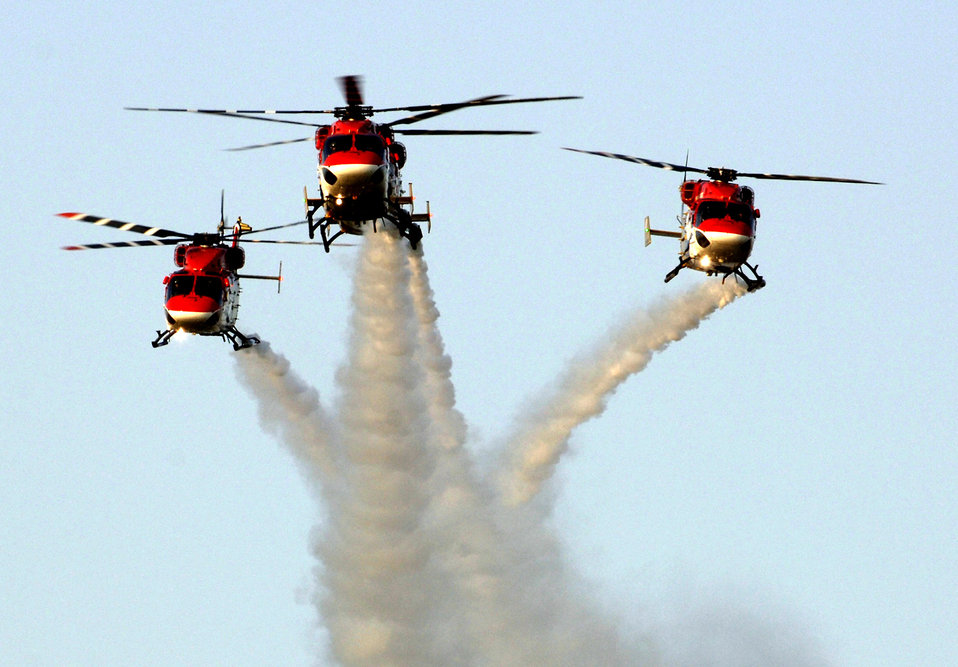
4th CISM World Military Games

Indian air force helicopters perform for more than 6,000 people at the Gachibowli Stadium in Hyderabad, India, for the 4th Conseil Internationale du Sport Militaire Military World Games Oct. 16. This is the largest international military Olympic-style event in the world. In this fourth edition of the games, 103 countries and more than 5,000 athletes are competing Oct. 14 to 21 in boxing, diving, soccer, handball, judo, military pentathlon, parachuting, sailing, shooting, swimming, volleyball and track and field. The purpose of the Military World Games is to promote